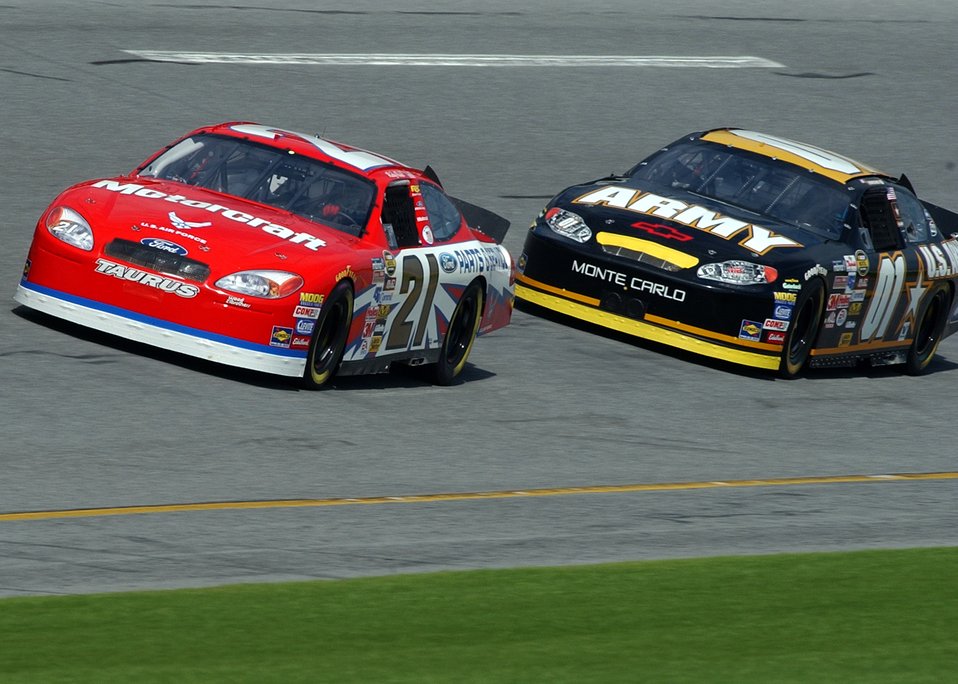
Air Force driver ready for Daytona 500

DAYTONA, Fla. -- The driver of the Air Force NASCAR car No. 21, Ricky Rudd, battles the Army's No. 1 driver, Joe Nemecheck, during practice here for the Daytona 500. The race will be held here Feb. 20.